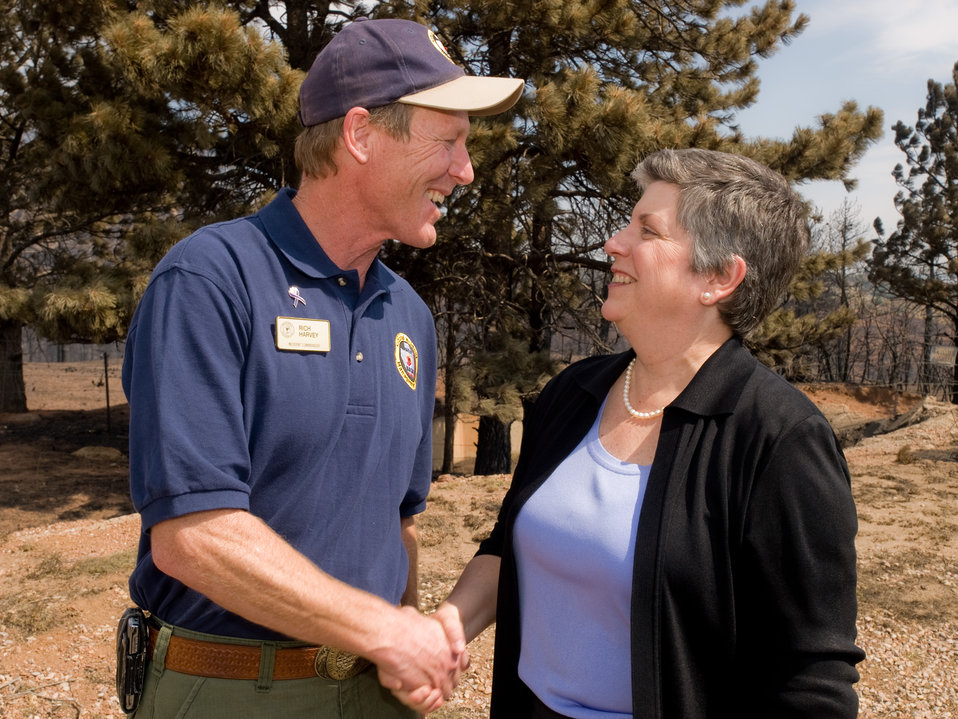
U.S. Forest Service Fire Incident Commander Rich Harvey meets with Homeland Security Secretary Janet Napolitano at the Waldo Canyon Fire near Colorado Springs, CO on Tuesday, July 3, 2012.